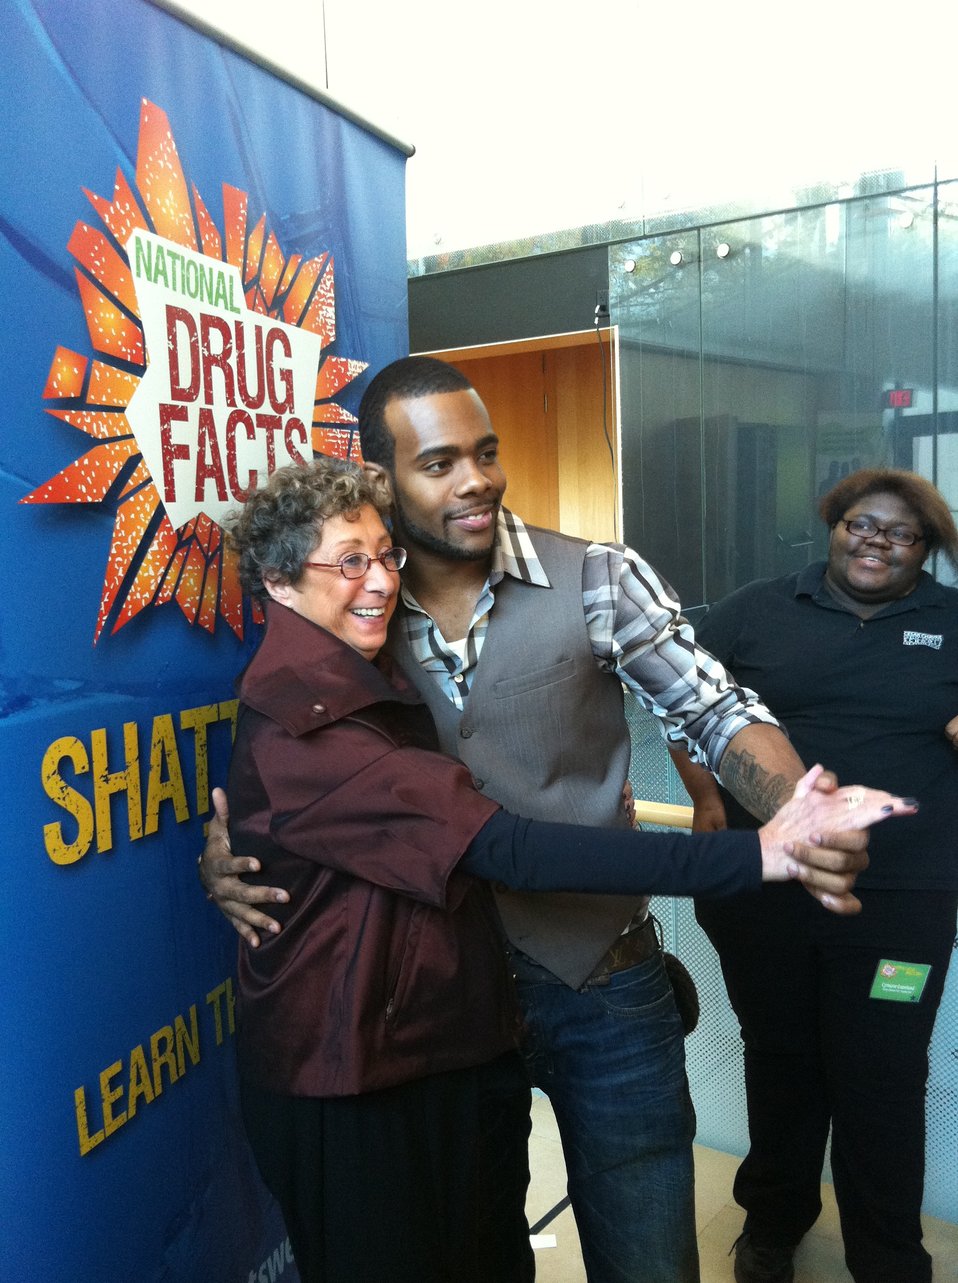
Mentor 22